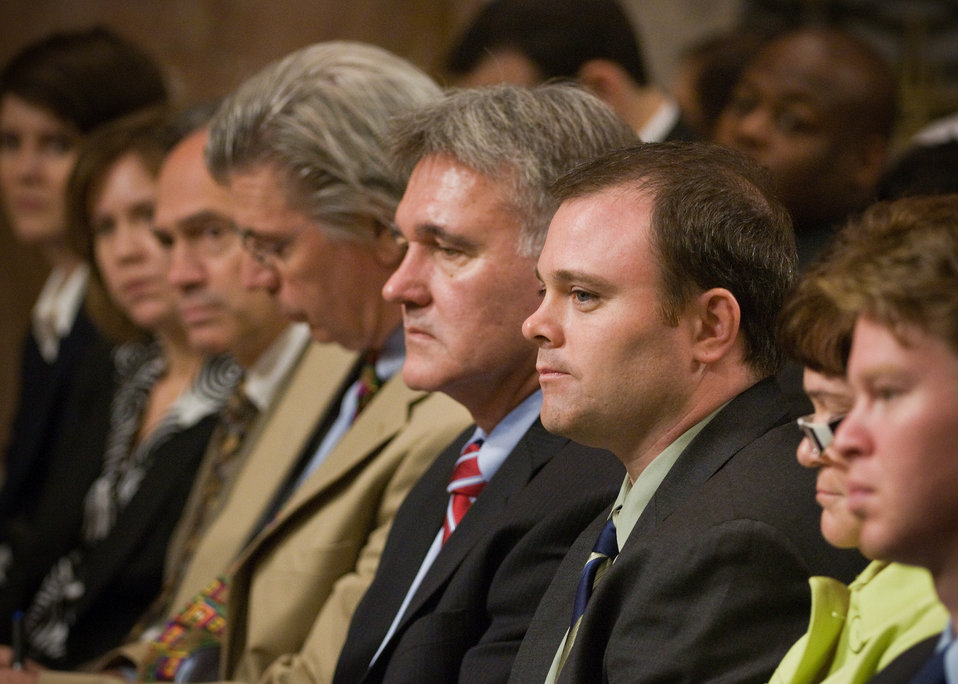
From left: Joseph Glauber, Chief Economist, William Murphy, Administrator, Risk Management Agency and Jonathan Coppess, Administrator, Farm Service Agency listen as Agriculture Secretary Tom Vilsack and Senators on the Senate Agriculture Committee discuss how well the farm bill is working for our nations farmers and ranchers. The hearing took place in the Dirksen Senate Office Building, in Washington, DC, on Wednesday, June 30, 2010. USDA Photo 10di1424-030.